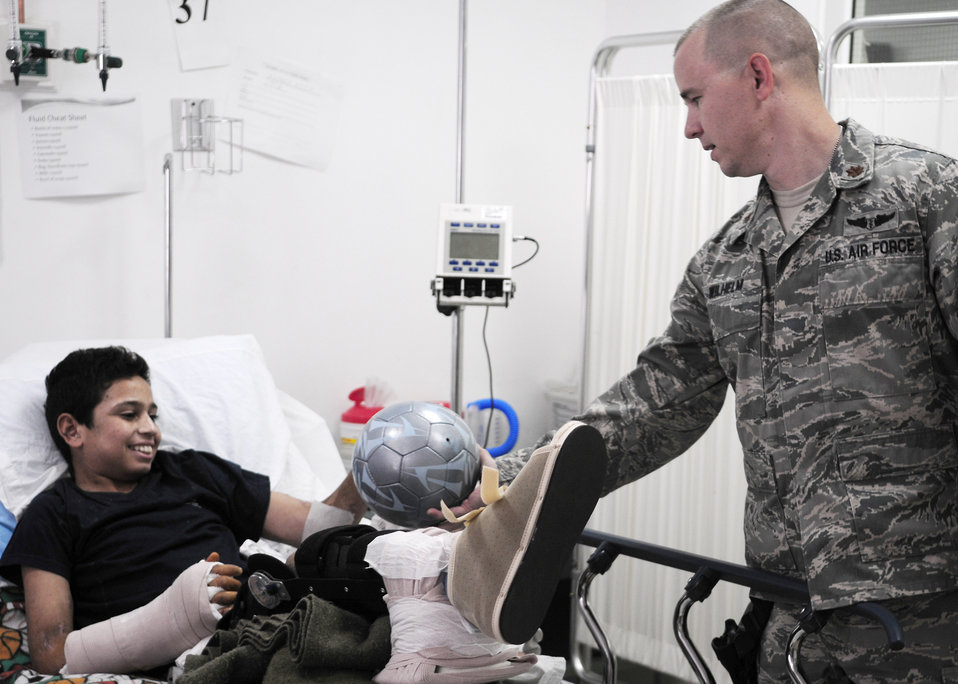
Air Force medics release 14-year-old mortar attack survivor after weeks of treatment

Maj. (Dr.) Chris Wilhelm hands a soccer ball to Ahmad, a 14-year-old Iraqi patient, before the boy's release Sept. 17, 2009, at Joint Base Balad, Iraq. Ahmad, injured by a mortar blast in August while playing in a field near the base, is expected to make a near-full recovery from trauma wounds to most of his body. Doctor Wilhelm is a pediatrician in the Air Force Theater Hospital intensive care unit.